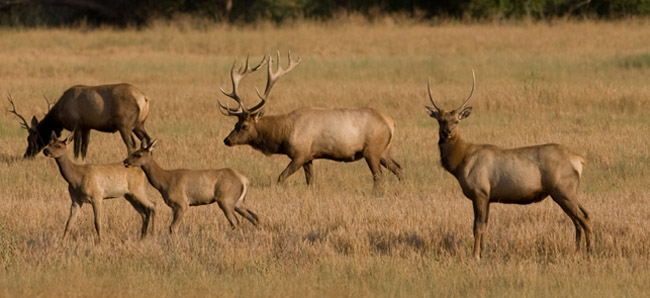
Tule Elk at San Luis Nat'l Wildlife Refuge